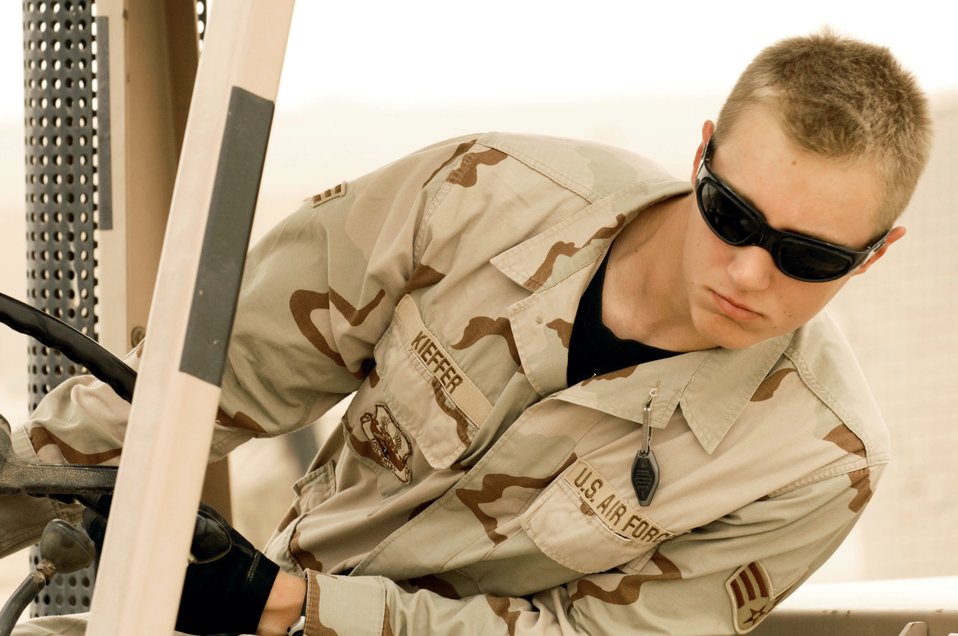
Fully armed

Senior Airman Christopher Kieffer checks his distance from a trailer he is loading with a container full of M-16's during a base-wide arming exercise June 14 at Ali Air Base, Iraq. Ali AB Airmen participated in the exercise to help fine-tune weapons distributing procedures in case of a real-world threat to the base. Airman Kieffer is assigned to the 407th Expeditionary Logistics Readiness Squadron.